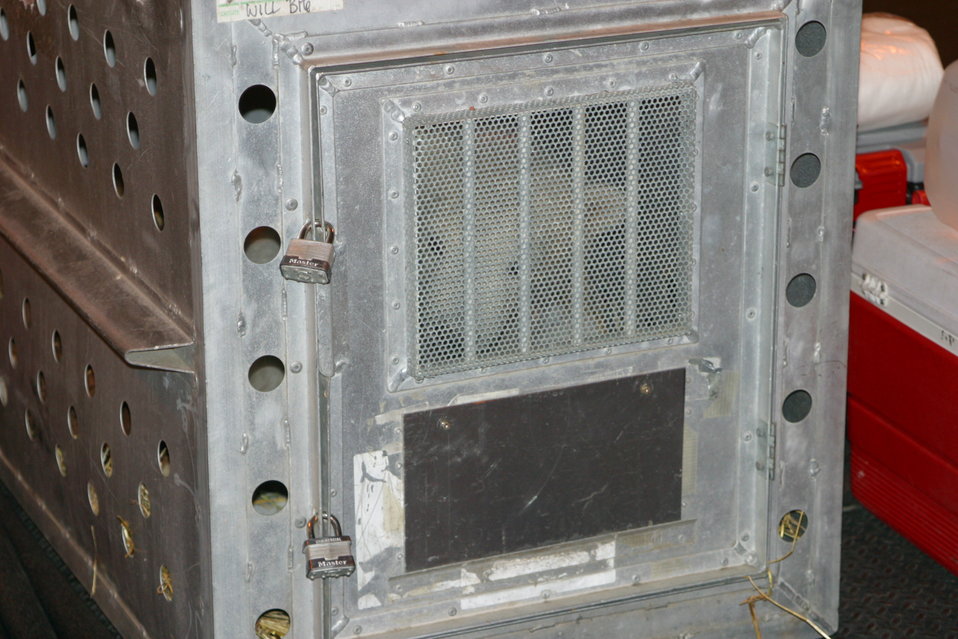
kali crate peekaboo